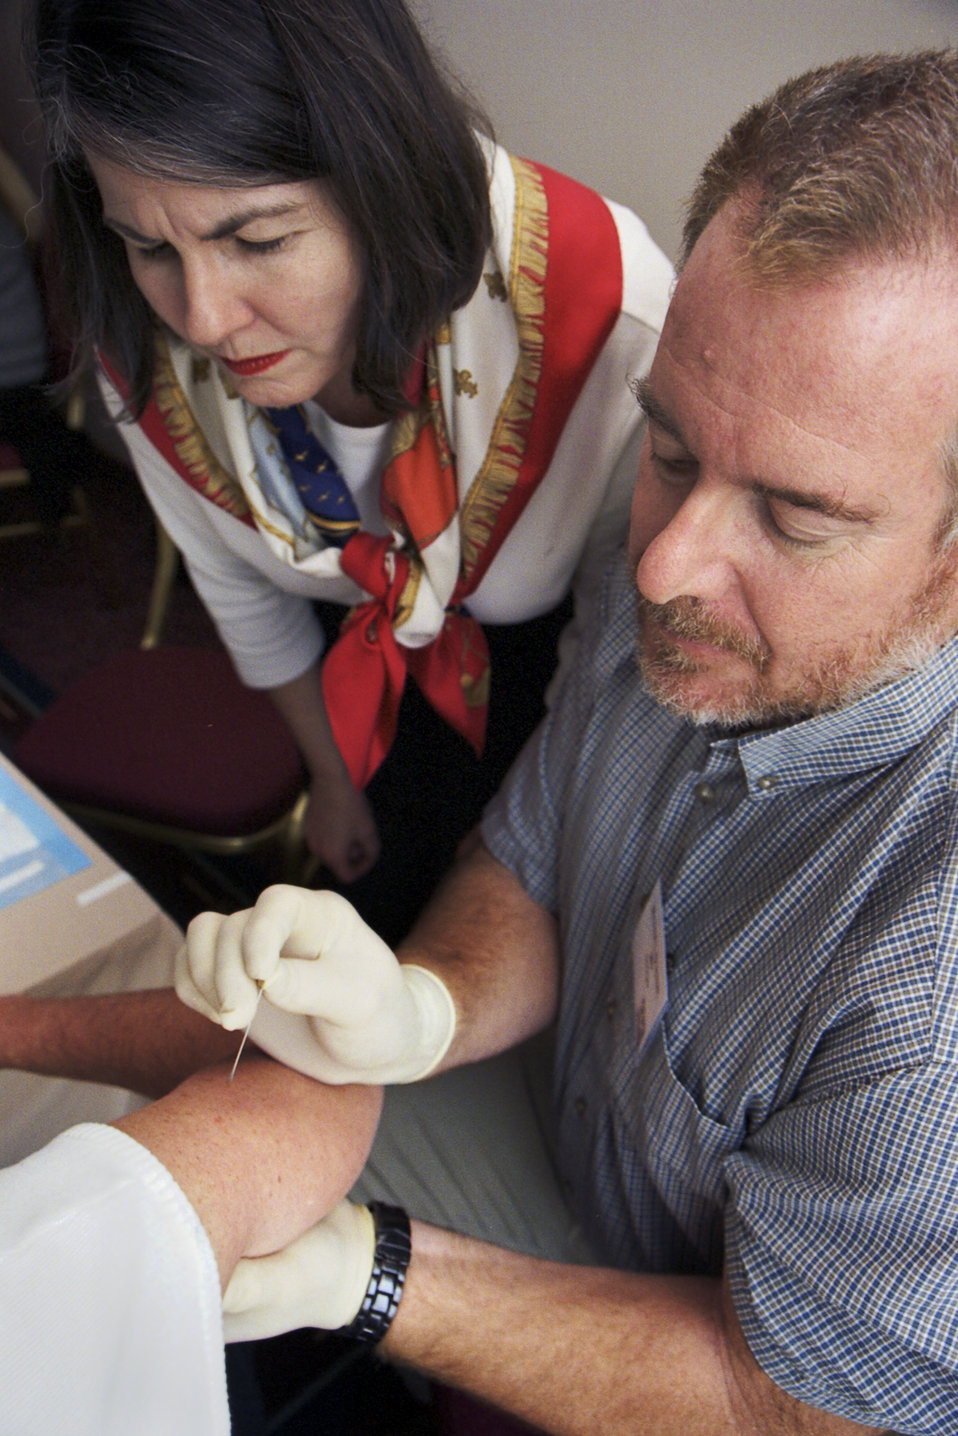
CDC Clinician, Melanie King, RN, observes proper technique with a bifurcated needle during a 2002 Smallpox Vaccinator Workshop.